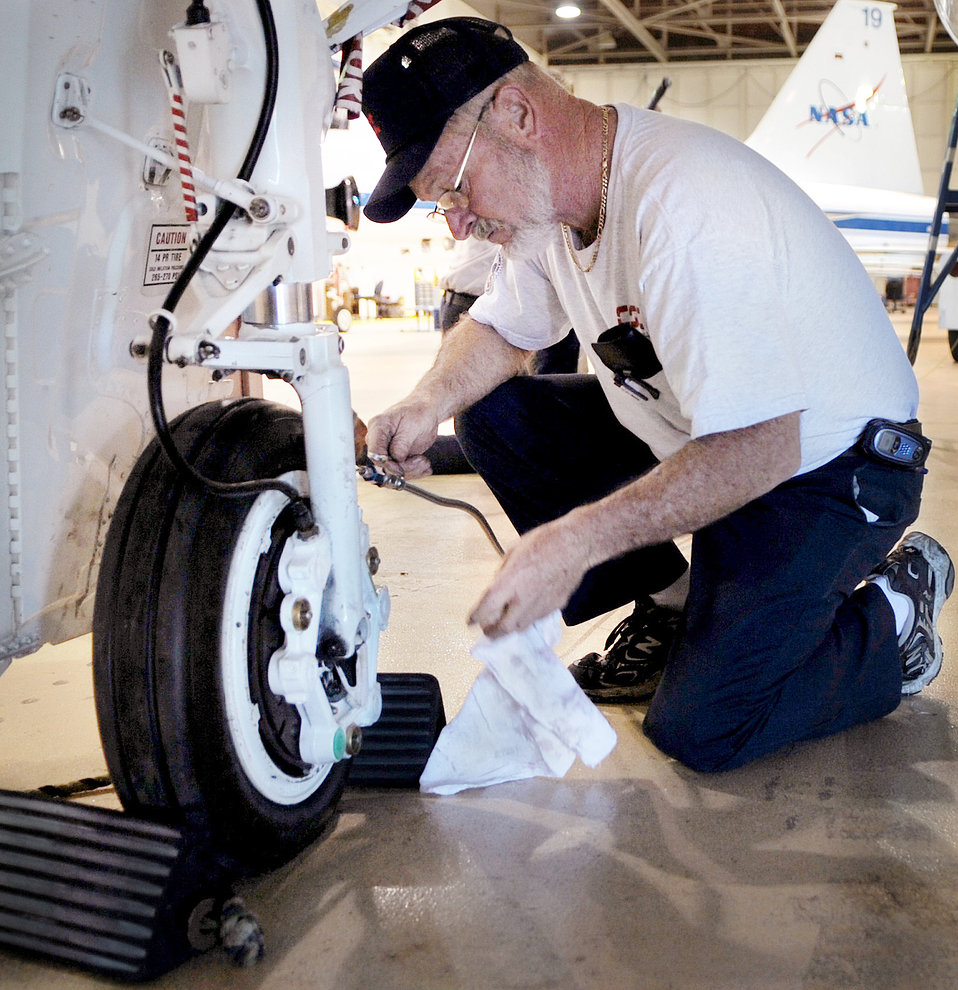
NASA trains pilots to fly high

Mike Parrott performs a routine brake check on a NASA T-38 Dec. 2 in Ellington Field, Texas. Mr. Parrott is an unscheduled maintenance crew leader for NASA.